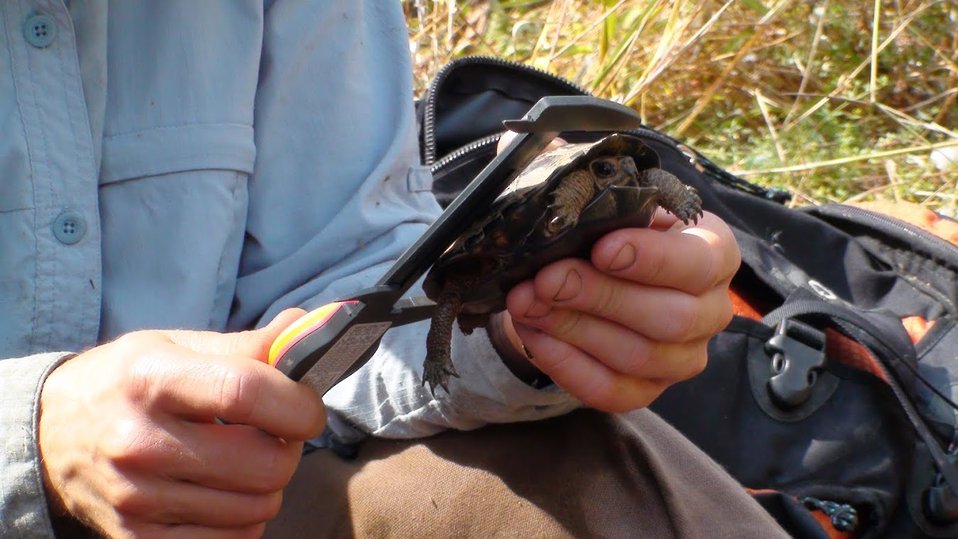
Bog turtle

Scientific name: Clemmys muhlenbergii
Status: Threatened and Similarity of appearance

Measuring a bog turtle shell.